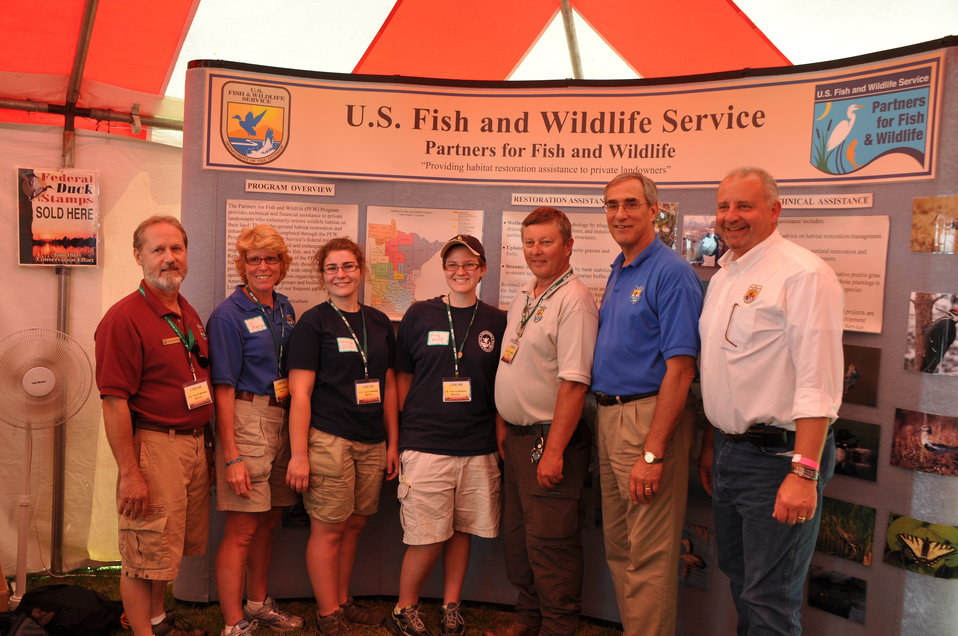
Partners for Fish and Wildlife Program.